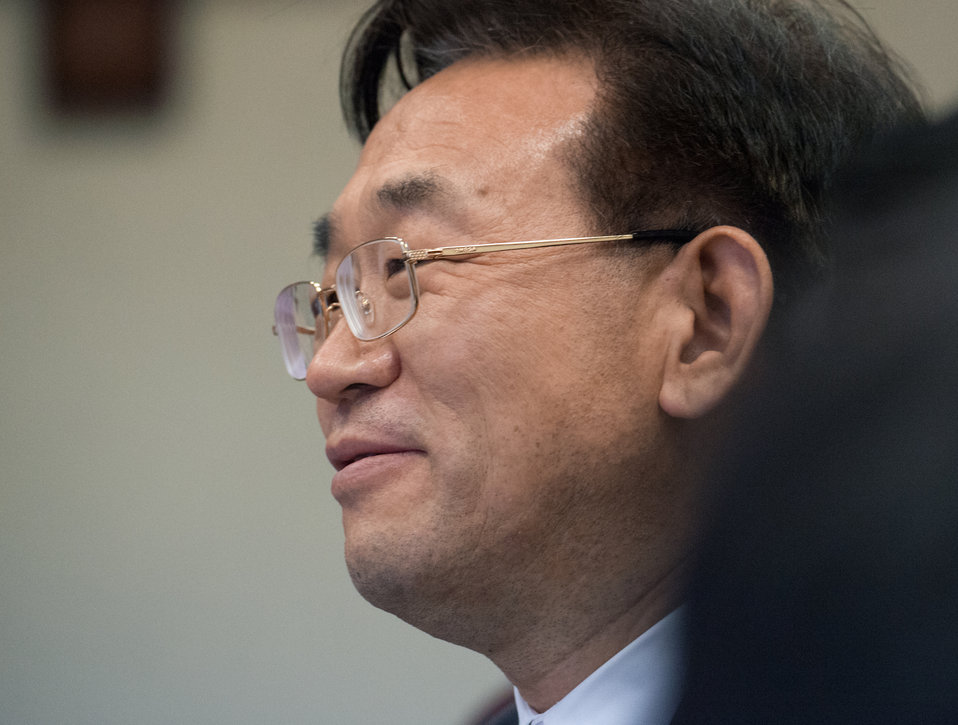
The People’s Republic of China Ministry of Agriculture (MOA) Vice Minister H.E. Zhang Taolin heads the Chinese Agricultural Delegation meeting with U.S. Department of Agriculture (USDA) Under Secretary for Natural Resources and Environment (NRE) Robert Bonnie and other USDA leaders at the USDA headquarters Whitten Building, in Washington, D.C., on Friday June 13, 2014.